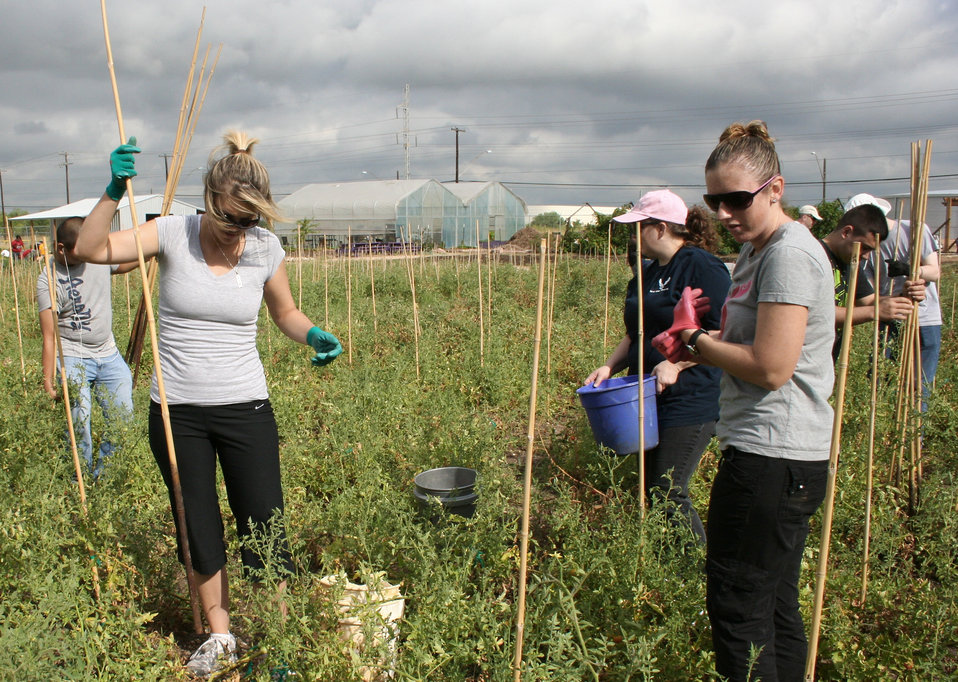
AFPC at SA food bank

Air Force Personnel Center assignment team volunteers harvest produce July 1, 2011, at the San Antonio Food Bank.